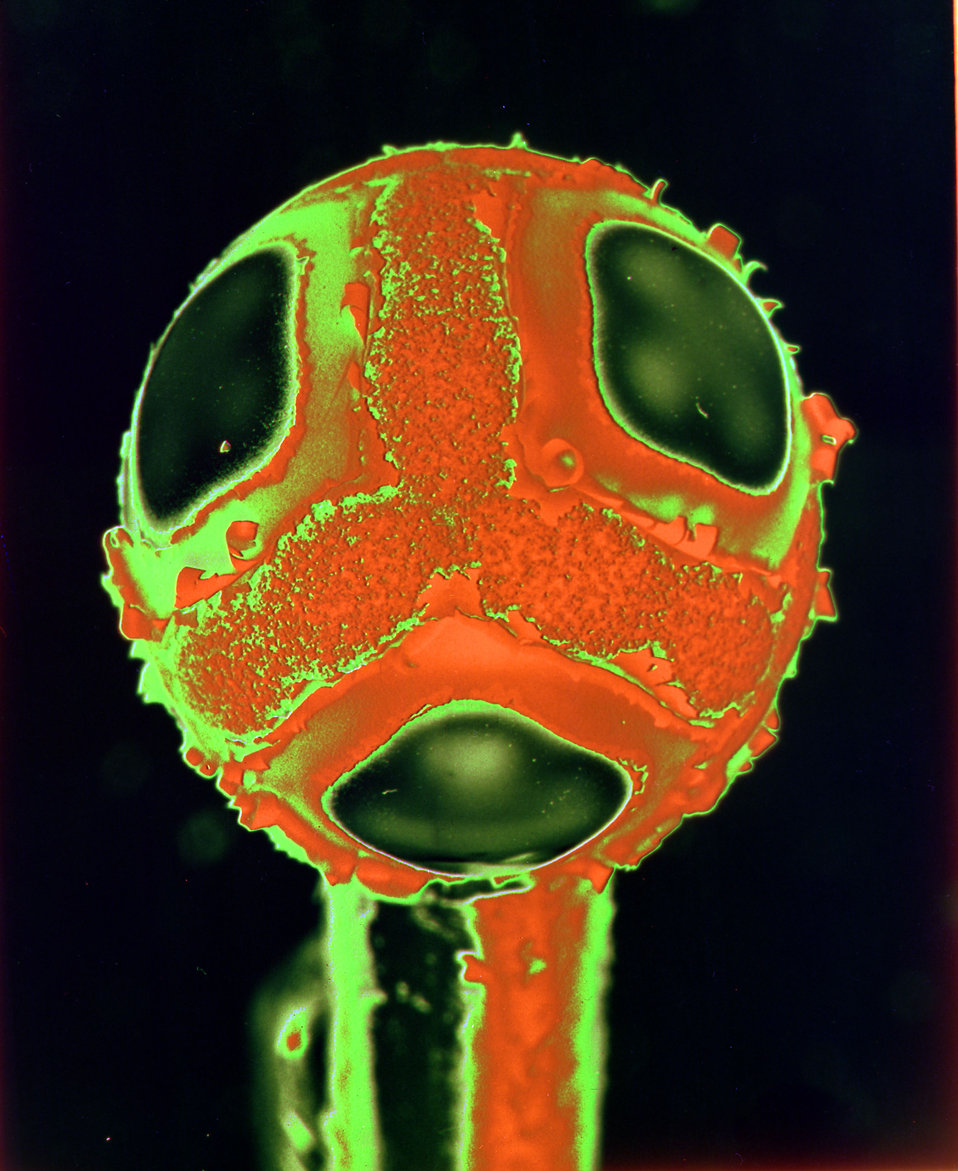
Color added to a black and white image from an electron microscope Oak Ridge

YP11700

Color added to a black and white image from an electron microscope. This is a single crystal sphere of niobium. Oak Ridge National Lab Oak Ridge Tennessee